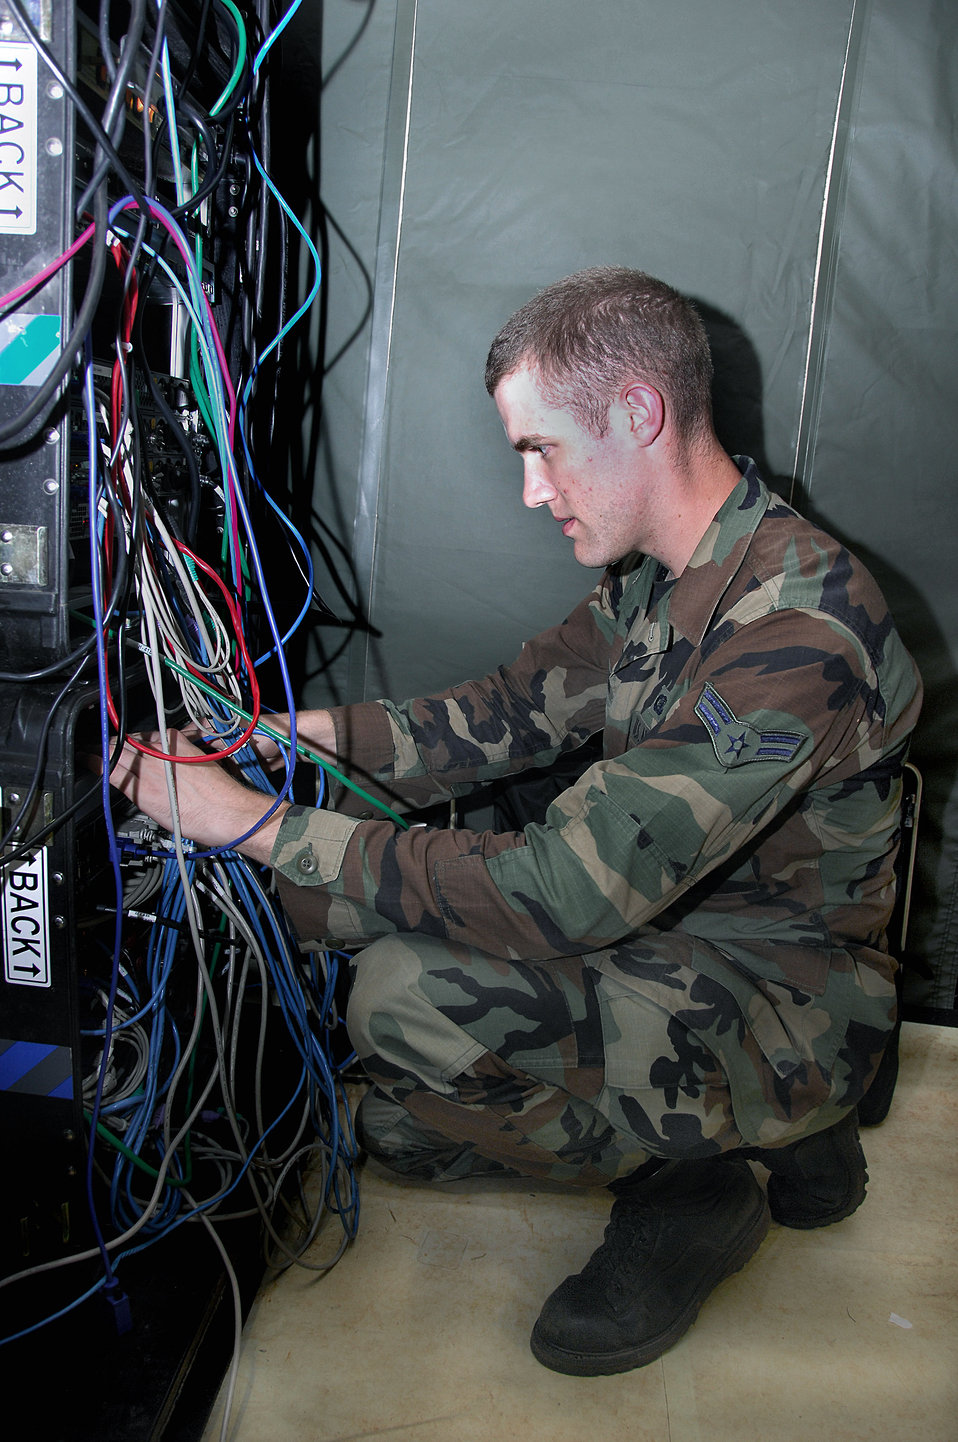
Andersen Airmen hear Dragon Thunder

Airman 1st Class Joseph Lapthorne ensures local area connection cables are secure during the squadron's Dragon Thunder field training exercise Nov. 20 at Andersen Air Force Base, Guam. Airman Lapthorne is a 644th Combat Communications Squadron network control center operator.